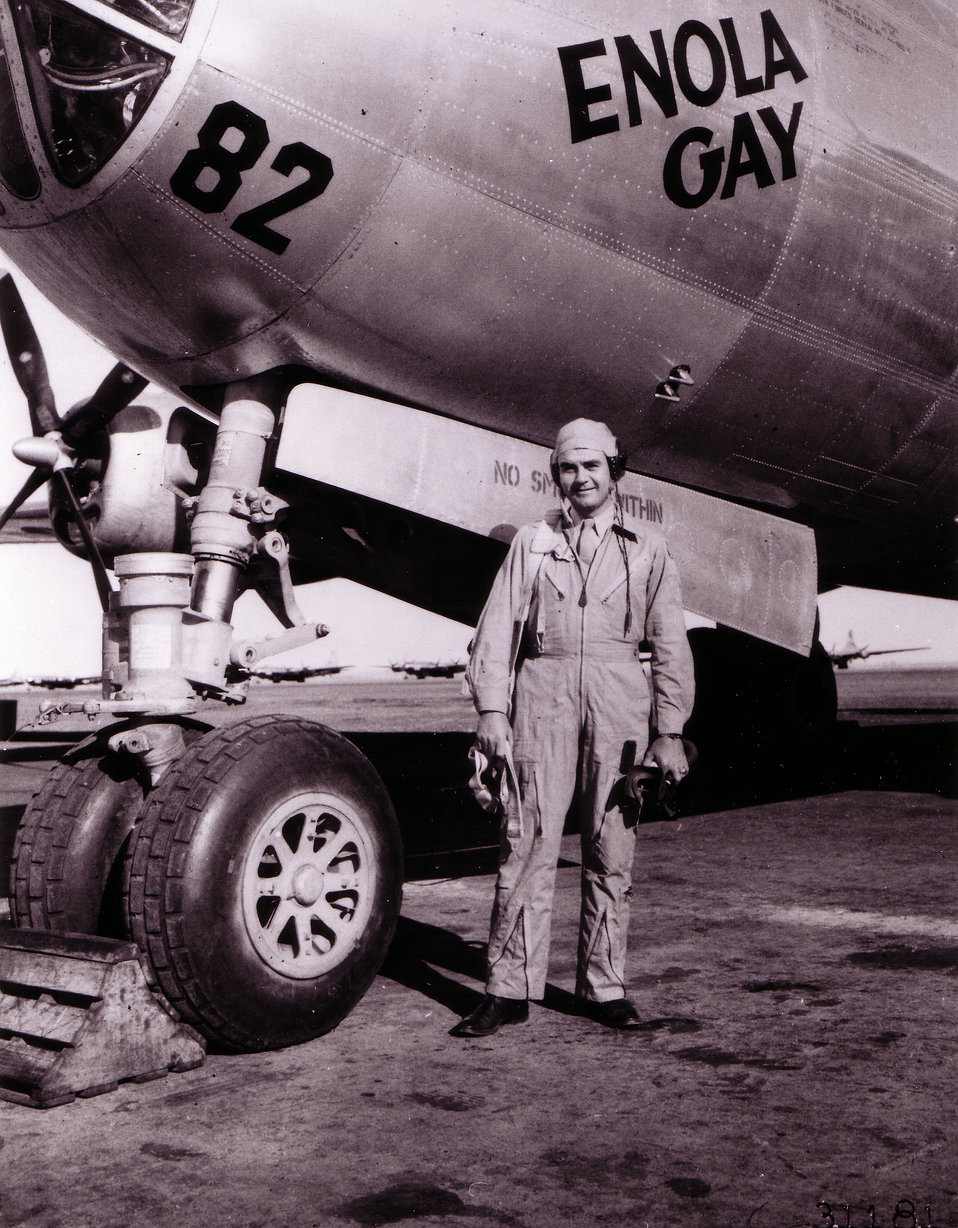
Col. Paul Tibbetts in front of the Enola Gay

1940's -- ROSWELL ARMY AIR FIELD, New Mexico -- Col. Paul Tibbetts, Jr., of Miami, Fla., poses in front of his B-29 Superfortress